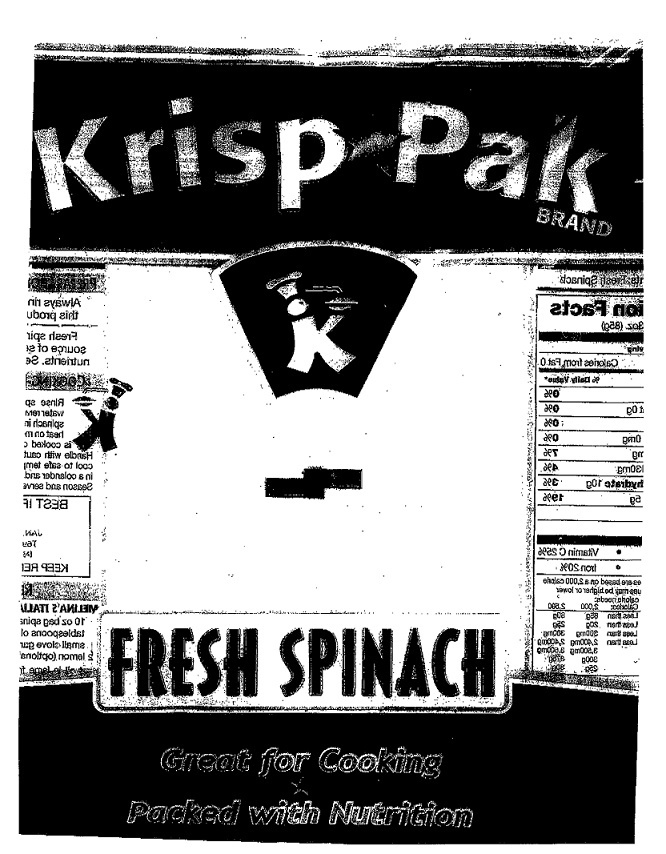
RECALLED - Fresh Spinach

December 23, 2011 - SAvon Heights Mushrooms, Inc. Recalls Fresh Spinach Because of Possible Health Risk For additional information, please refer to the company issued press release available on FDA's web site at www.fda.gov/Safety/Recalls/UCM285071